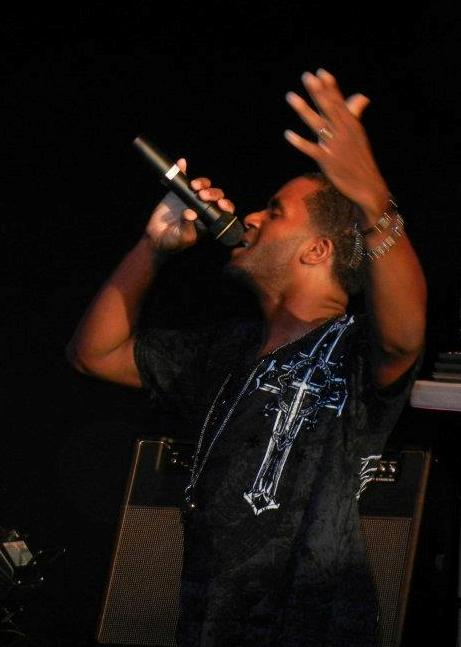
Rapping for Jesus

Staff Sgt. Christopher Watts, performs his music during a concert. Watts is a aircrew flight equipment technician with the 325th Operations Support Squadron.